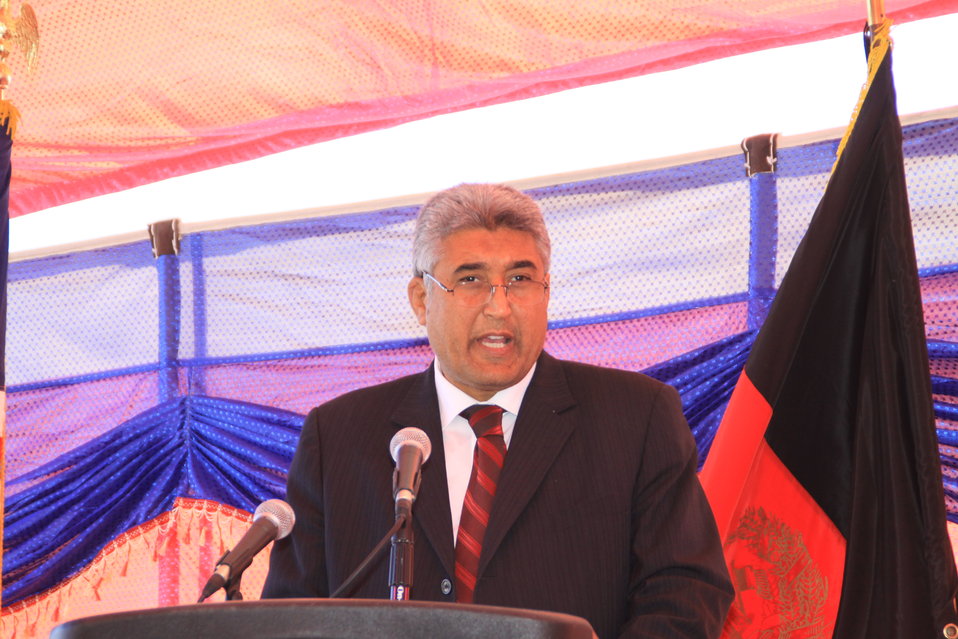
دهاقین افغان در راه اندازی توزیع تخم بذری گندم سال 2010 اویپا (AVIPA) زمین های خود را کشت نمودند